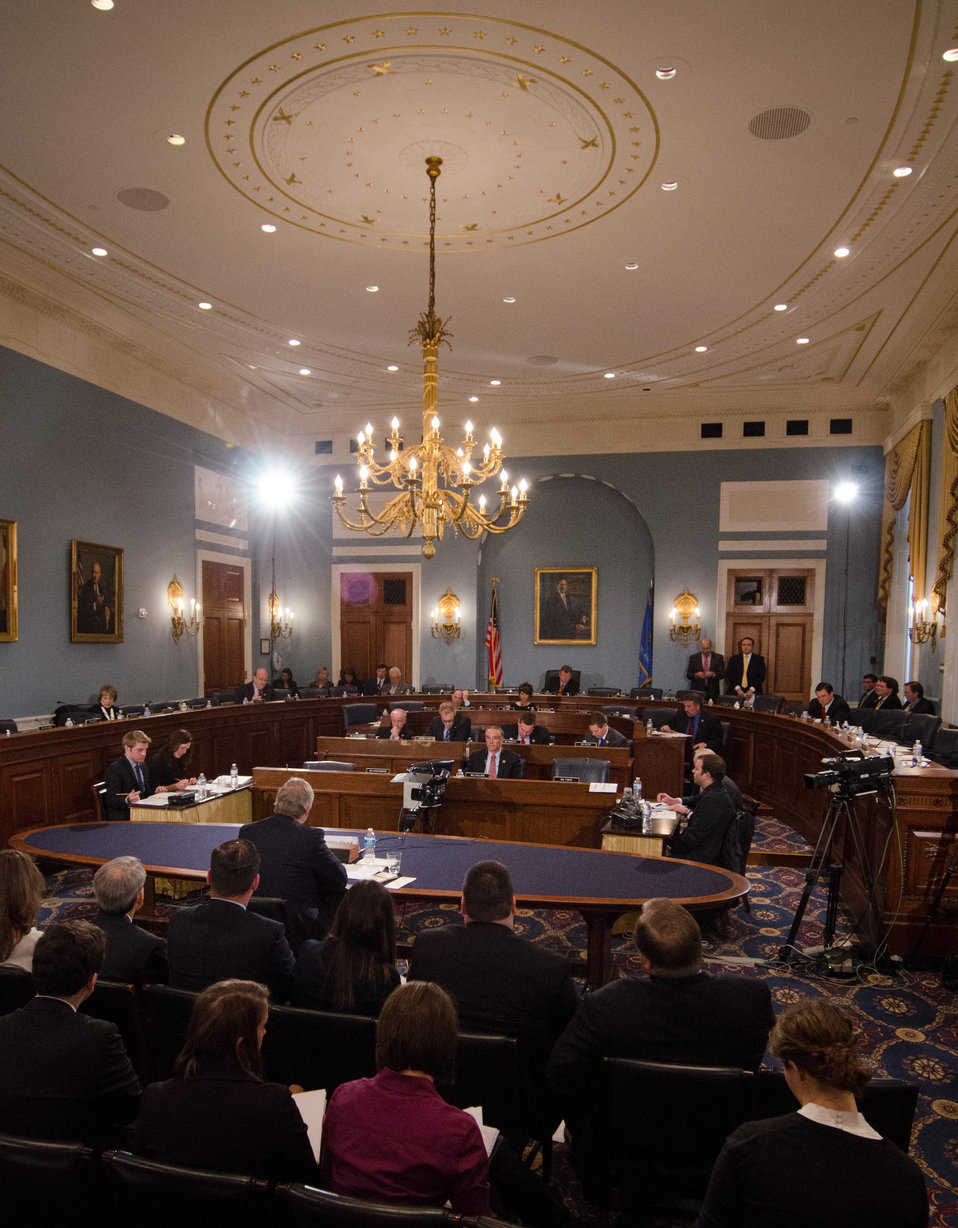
Agriculture Secretary Tom Vilsack testifies before the House Agriculture Committee regarding the “State of the Rural Economy“ at the Longworth House Office Building in Washington, D.C. on Tuesday, Mar. 5, 2013.